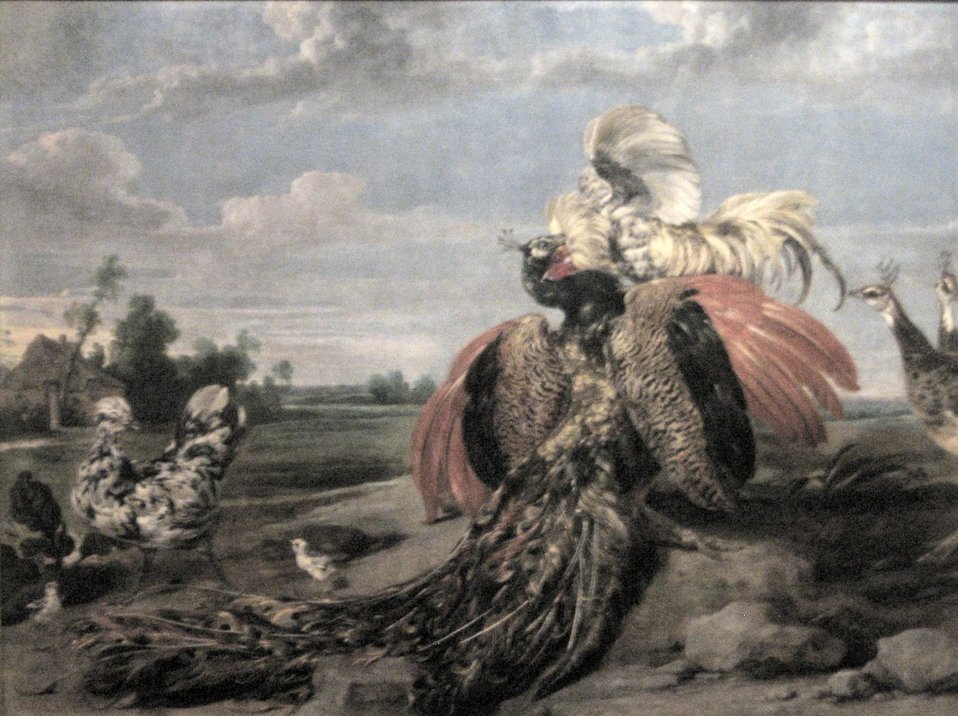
'Peacock and Cock Fighting', oil on canvas painting by Paul de Vos, 17th century, Museu Calouste Gulbenkian, Lisbon